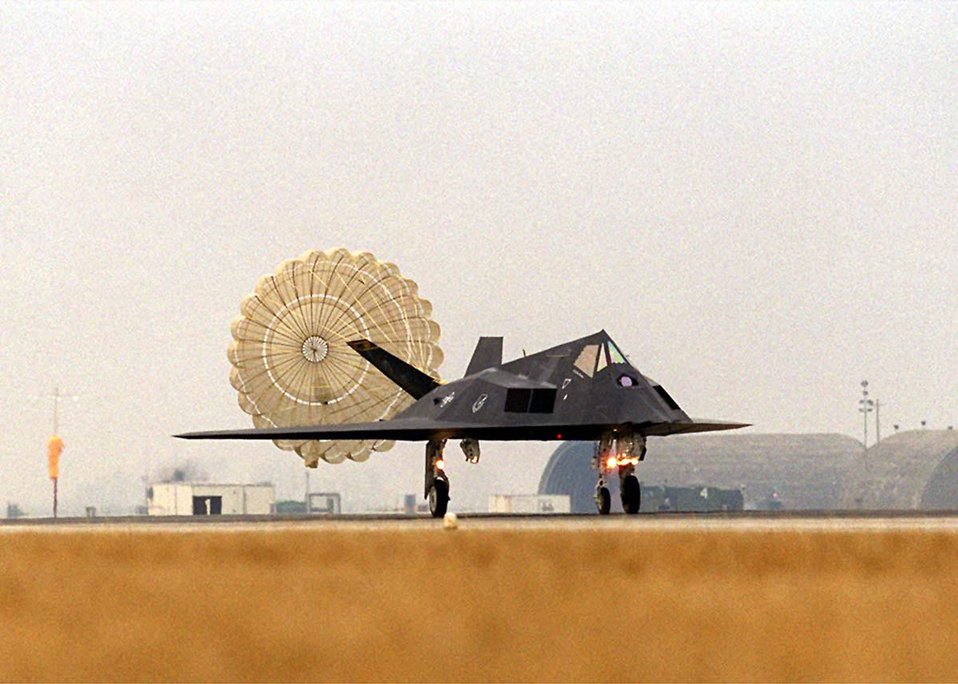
Touch down

AVIANO AIR BASE, Italy -- An F-117 Nighthawk stealth fighter from the 8th Fighter Squadron, Holloman Air Force Base, N.M., touches down here, Feb. 21. If needed, the F-117s will support NATO operations over the former Republic of Yugoslavia.